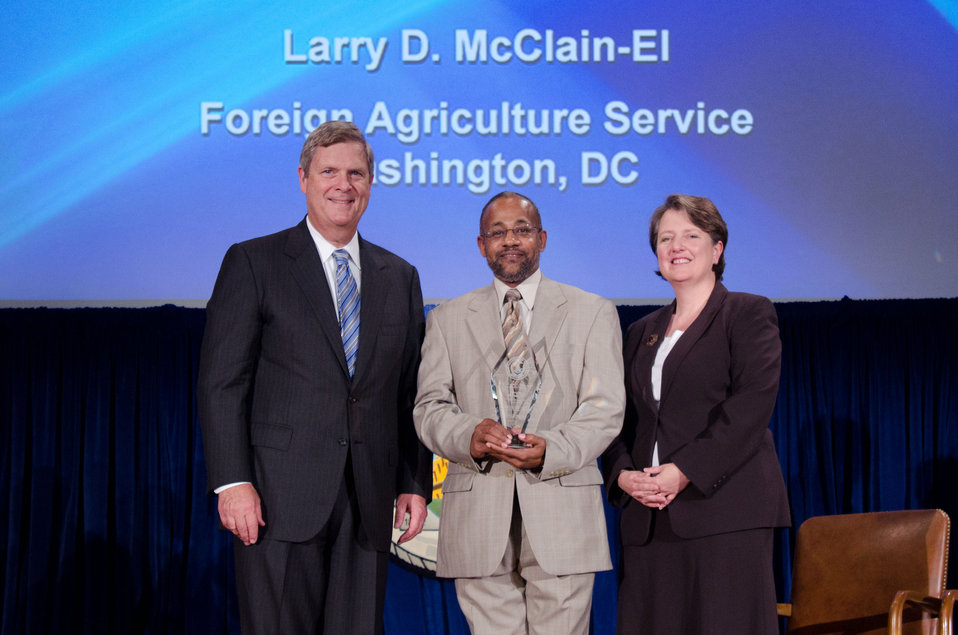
Agriculture Secretary Tom Vilsack (l) and Deputy Secretary Kathleen Merrigan (r), presents the Award for Personal and Professional Excellence to Larry D. McClain-El, Foreign Agriculture Service, Washington, DC. For outstanding leadership in enacting greater fiscal discipline to the USDA international l food aid and technical assistance programs, while working with Department staff to mitigate billing problems threatening program operations. On Wednesday, September 14, 2011 in the Jefferson Auditorium at the US Department of Agriculture in Washington, DC.